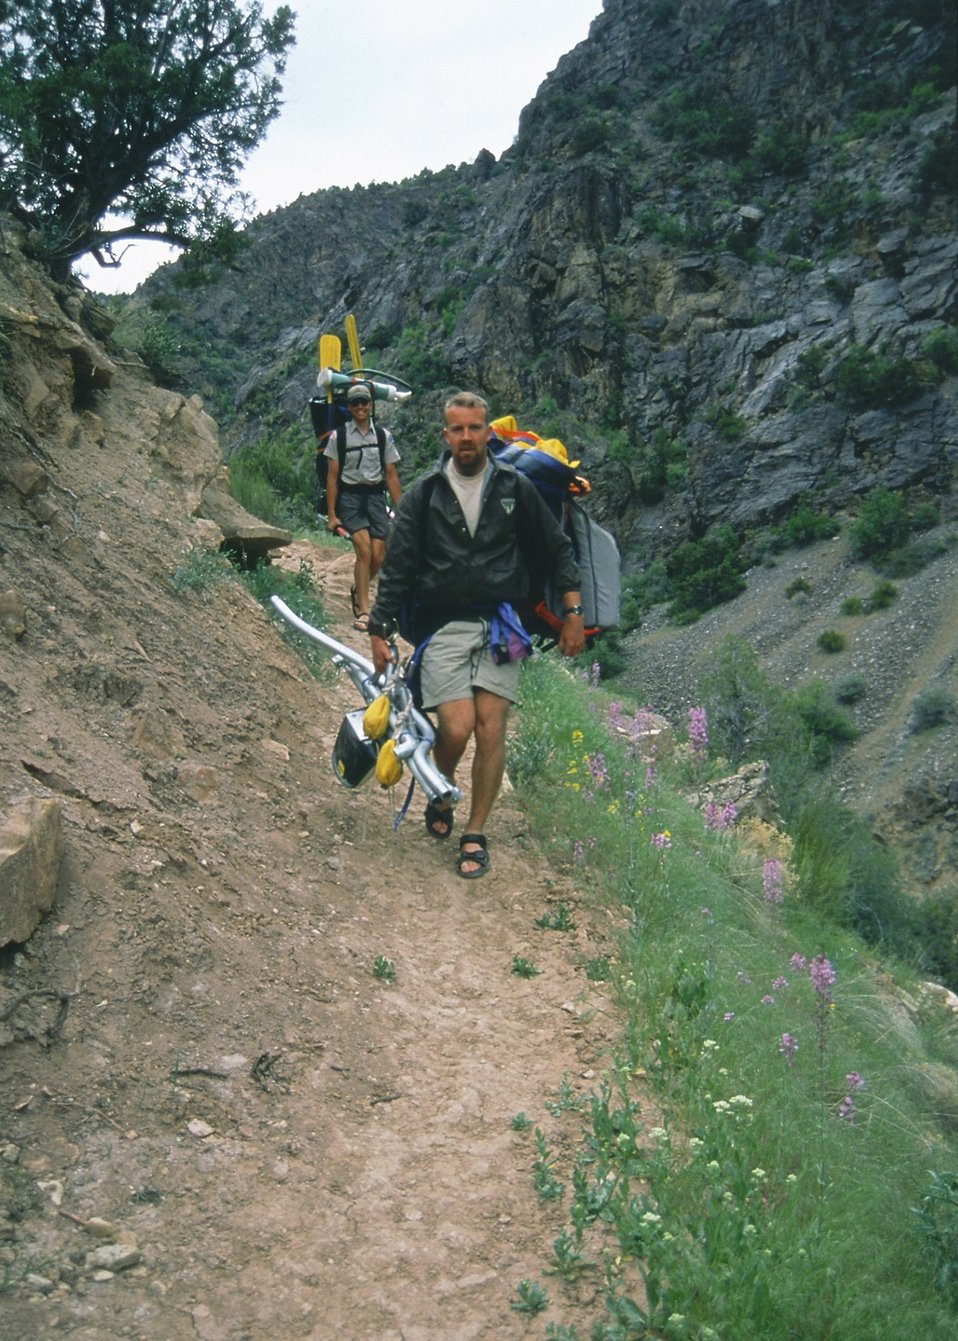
BLM Employees on Trail